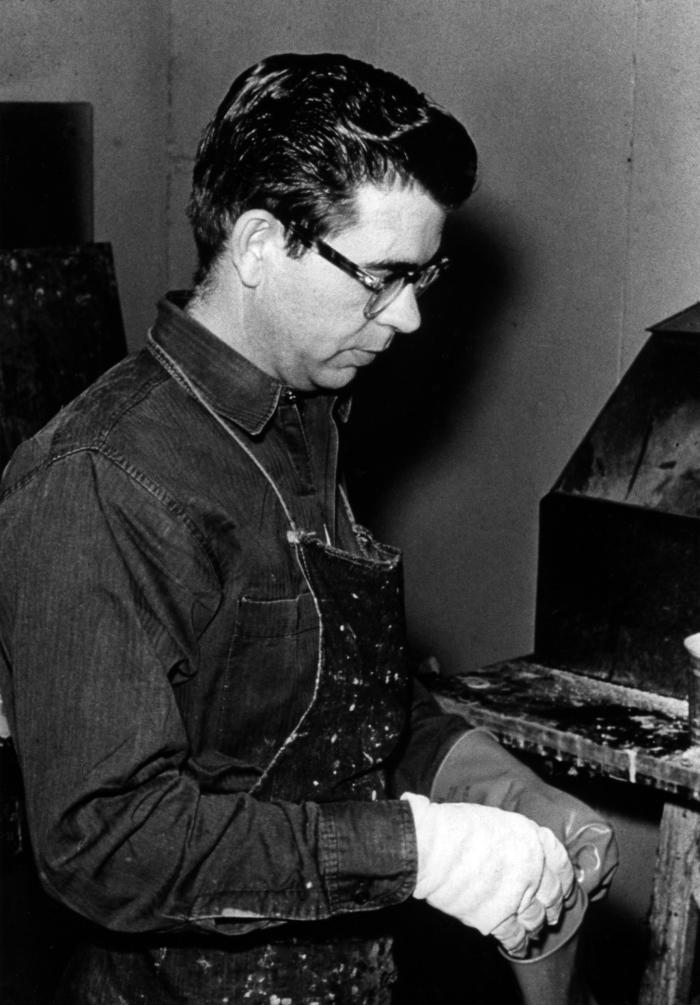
This historic image, provided by the Center for Disease Control's (CDC), National Institute for Occupational Safety and Health (NIOSH), depicted an industrial worker donning a second pair of work gloves prior to beginning a task involving interaction with an epoxy resin. Though he had yet to begin work with the epoxy, and it was not apparent as to whether or not he was about to do so, he had yet to wear a filtered mask, in order to avoid breathing toxic fumesIn gaining a better understanding of workplace hazards, through hands-on and on-site information acquisition, protocol-formulating bodies such as NIOSH, are better able to create a safer workplace through substantiation of appropriate safety regulations.